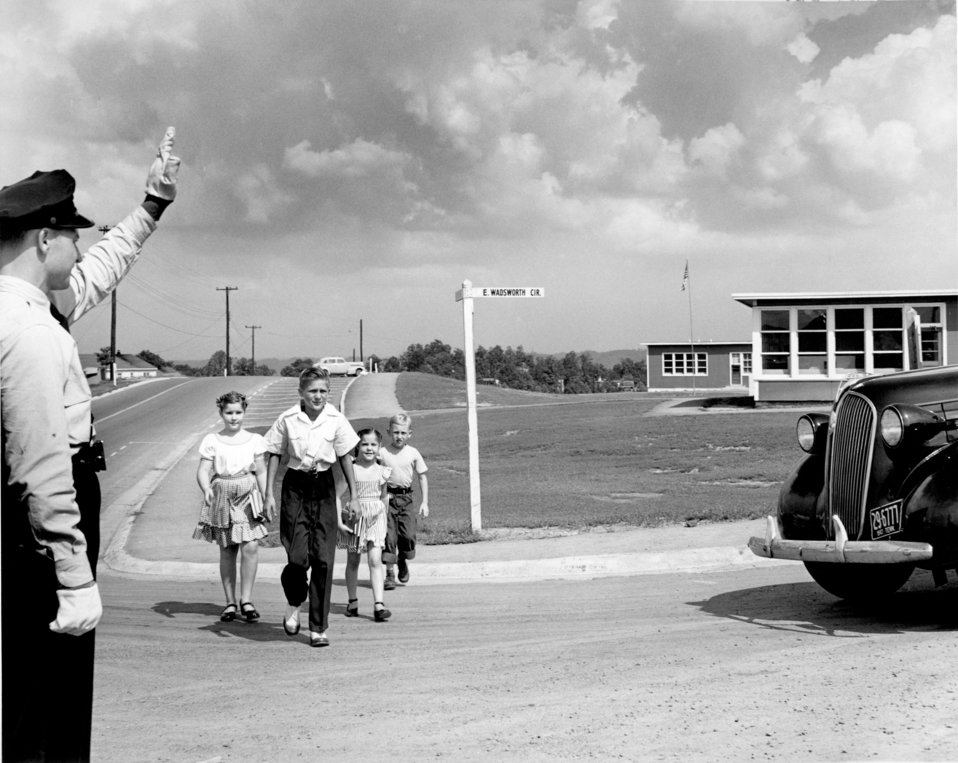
School Crossing at Highland View School 1947 Oak Ridge

3689 DOE photo Ed Westcott 8-12-1947 Oak Ridge Tennessee